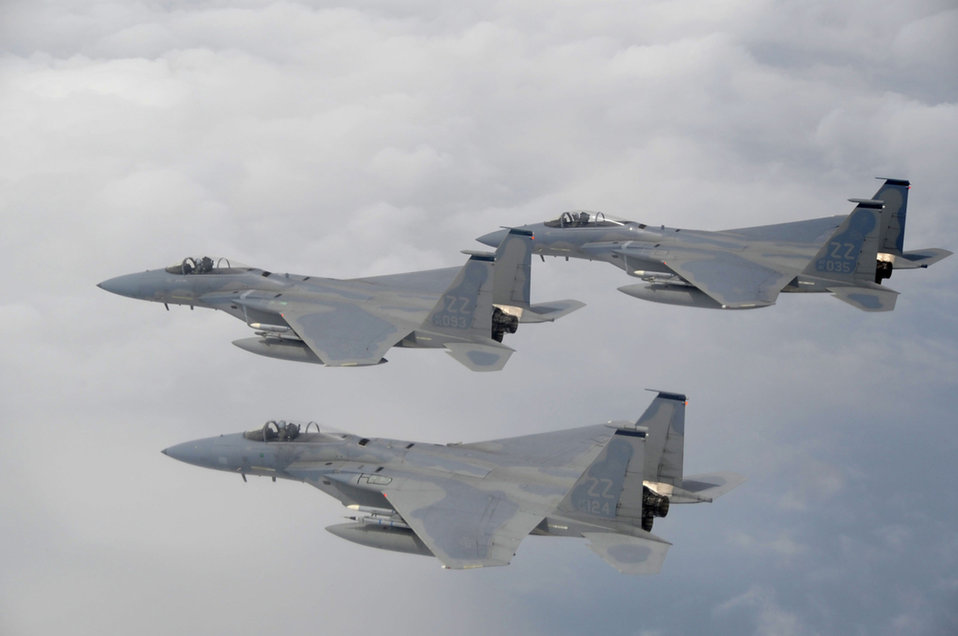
Cope Tiger 2011

F-15 Eagles assigned to the 44th Expeditionary Fighter Squadron at Kadena Air Base, Japan, fly over Thailand March 23, 2011, prior to starting an exercise scenario during Cope Tiger 2011, which runs from March 14 through 25. Participants of Cope Tiger include the U.S. Air Force, the U.S. Marine Corps, the Royal Thai Air Force, Royal Thai Army and the Republic of Singapore Air Force.